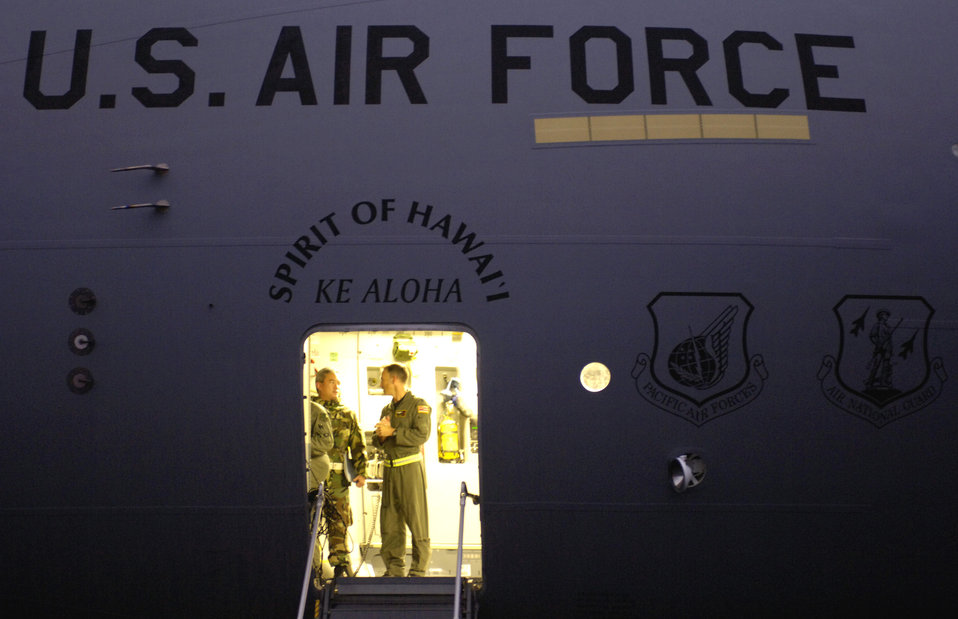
C-17s deliver relief to Kauai

Lt. Col. Woody Woodrow and Master Sgt. Bruce Hara discuss loading recovery equipment on a C-17 Globemaster III at Hilo International Airport, Hawaii, Thursday, March 16, 2006. The C-17 delivered recovery equipment to the island of Kauai, Hawaii after a dam burst, isolating thousands of people along the island's north shore. Colonel Woodrow is with the Hawaii Air National Guard's 204th Airlift Squadron and Sergeant Hara is with Guard's 291st Combat Communication Squadron.